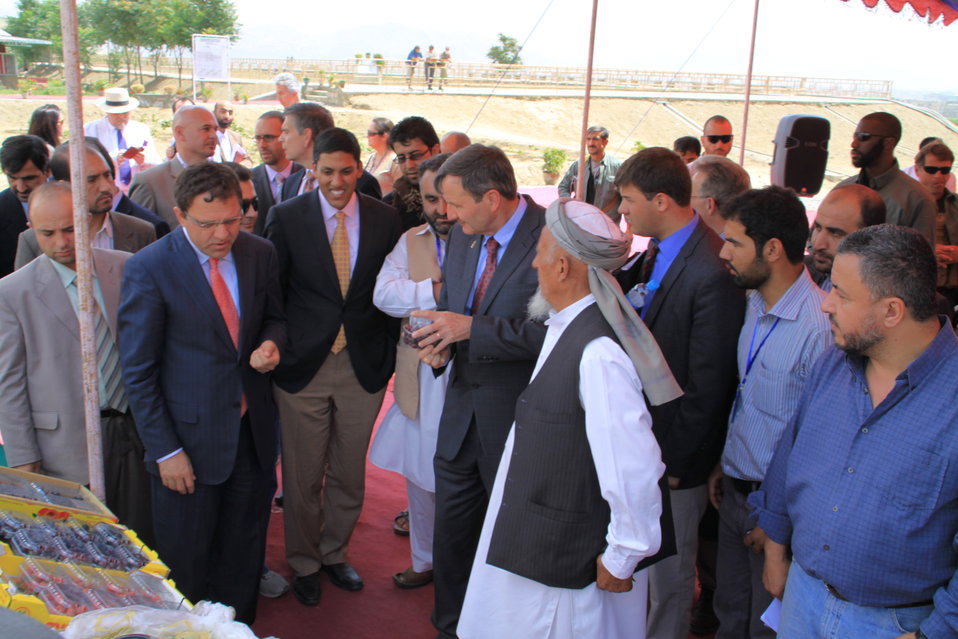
Baddam Bagh Farm